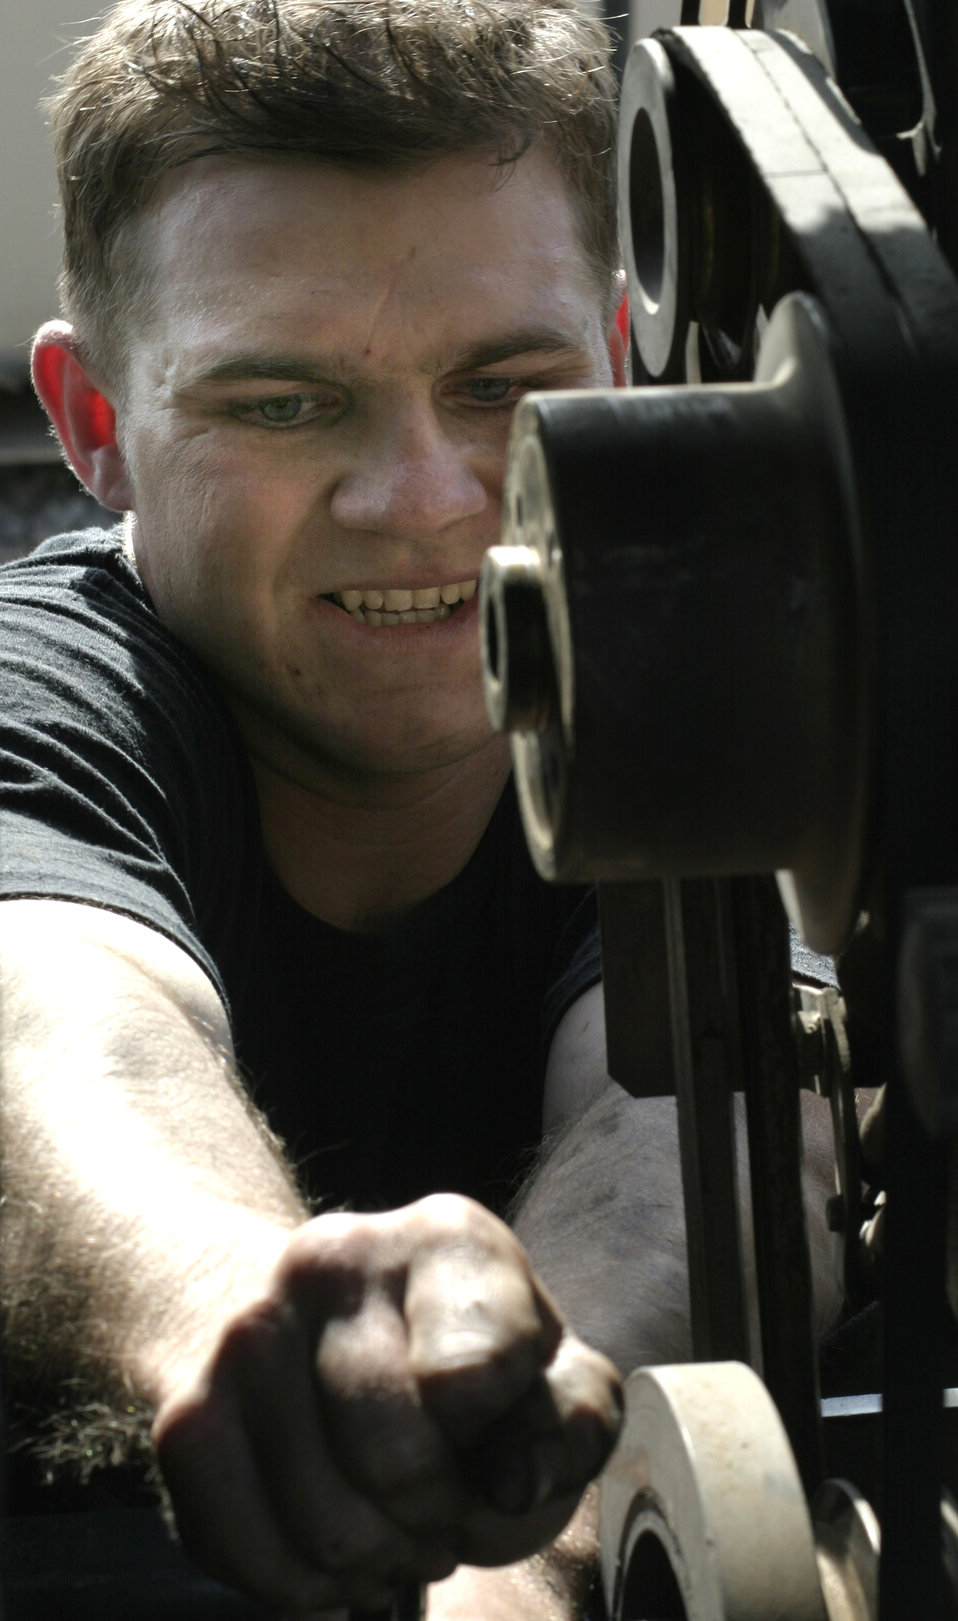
Airmen keep Iraqi airways clear

BALAD AIR BASE, Iraq -- Senior Airman Matthew Hendrickson changes a main seal on a generator. He is a 727th Expeditionary Air Control Squadron aerospace ground equipment journeyman.